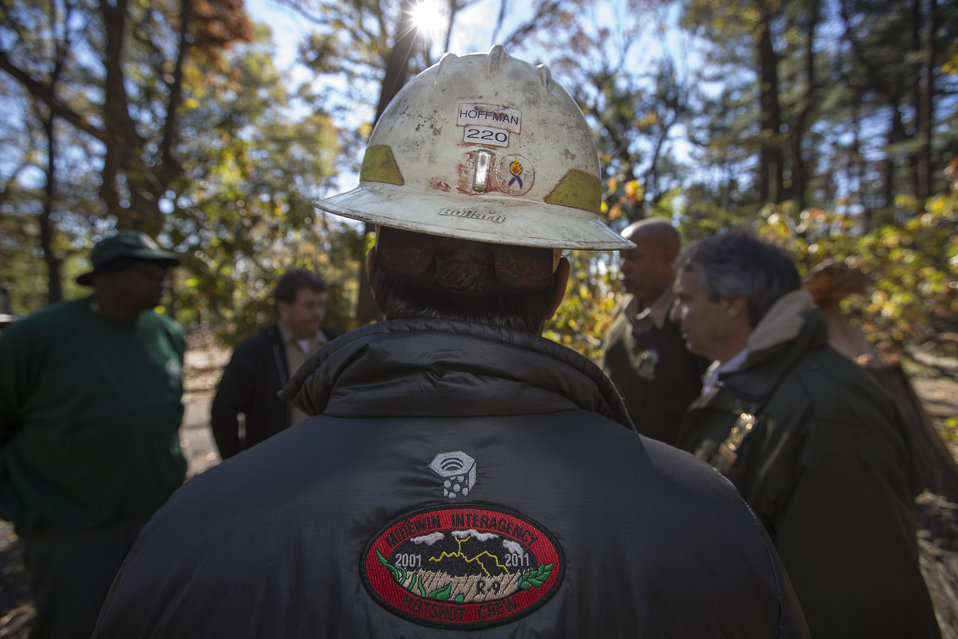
U.S. Forest Service (USFS) Division Supervisor Jerry Hoffman meets with New York City Park officials about clearing Forest Park in Queens, NY of hazardous downed trees to make it safe for residents in the area on Nov. 4, 2012. The park is a major walking thoroughfare including popular recreational trails. Division Superintendent with the Midewin Interagency Hot Shots from Wilmington, IL Jerry Hoffman took on the role of Division Supervisor of multiple USFS crews from all over the country, including Ohio, Arkansas, Virginia, and Illinois in response to Hurricane Sandy in New York.